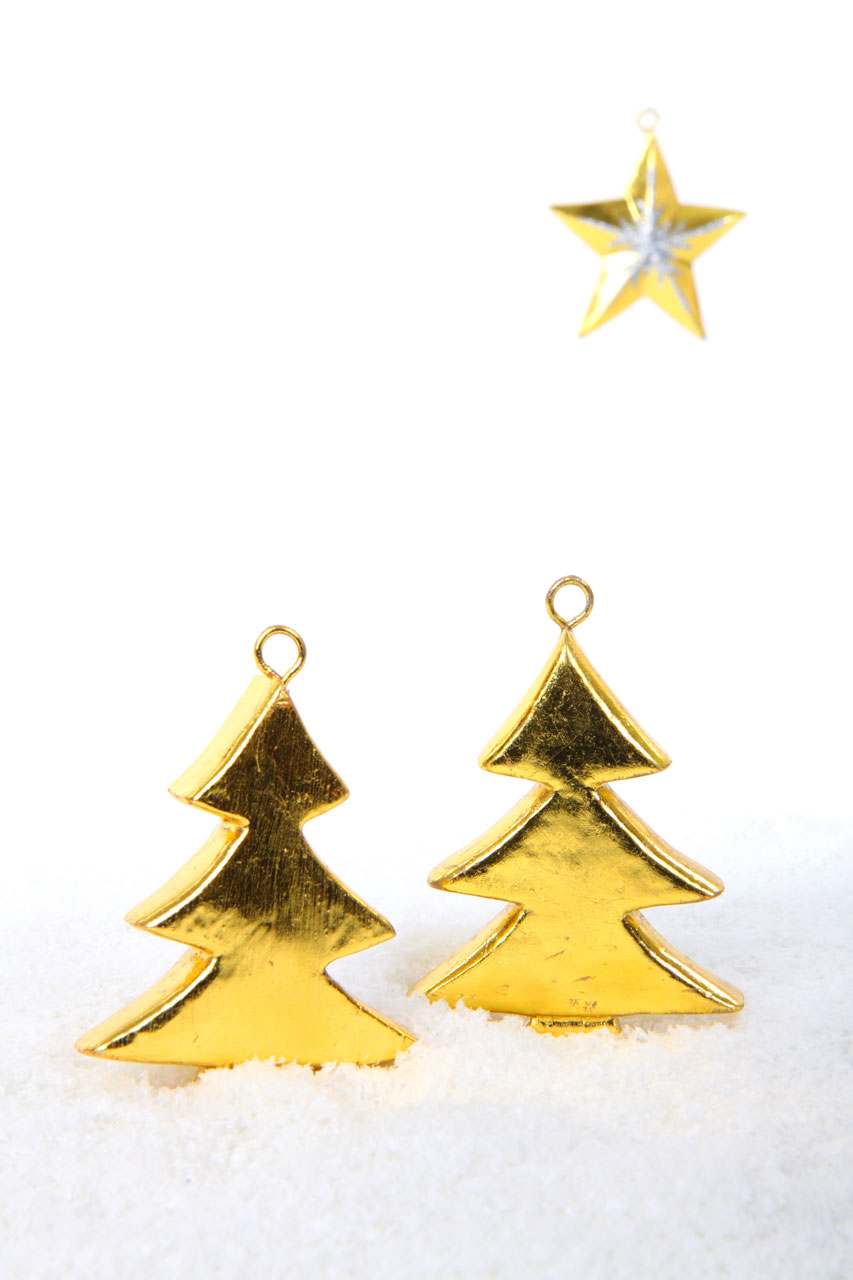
Golden trees with star

Golden trees in snow with star in the background.